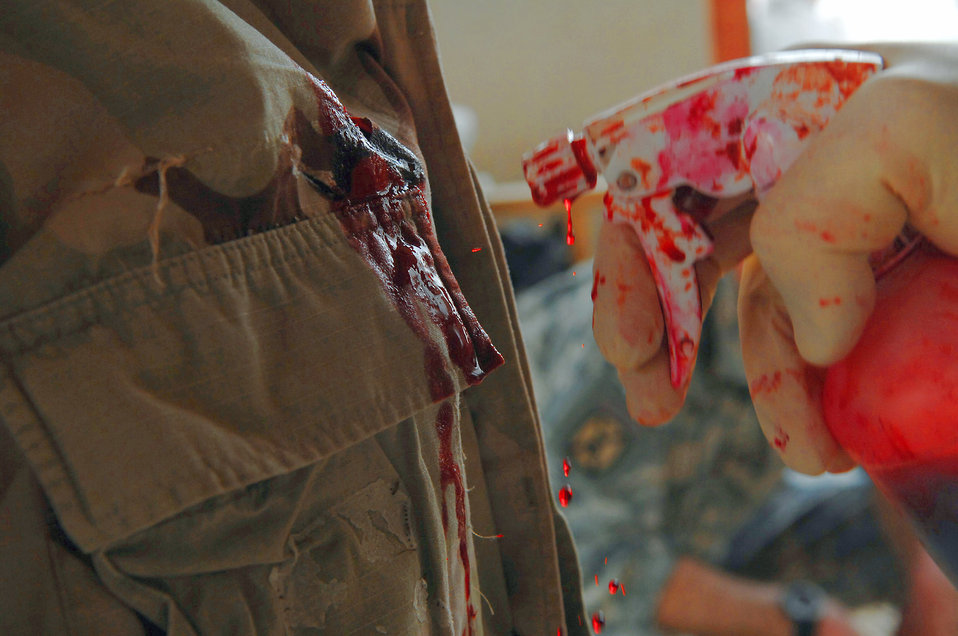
That looks like it hurts

Moulage is added to give an element of realism during a mass casualty battle drill March 31 at Balad Air Base, Iraq. Fake blood, burns, lacerations and many other types of wounds were used to make the different scenarios come to life.